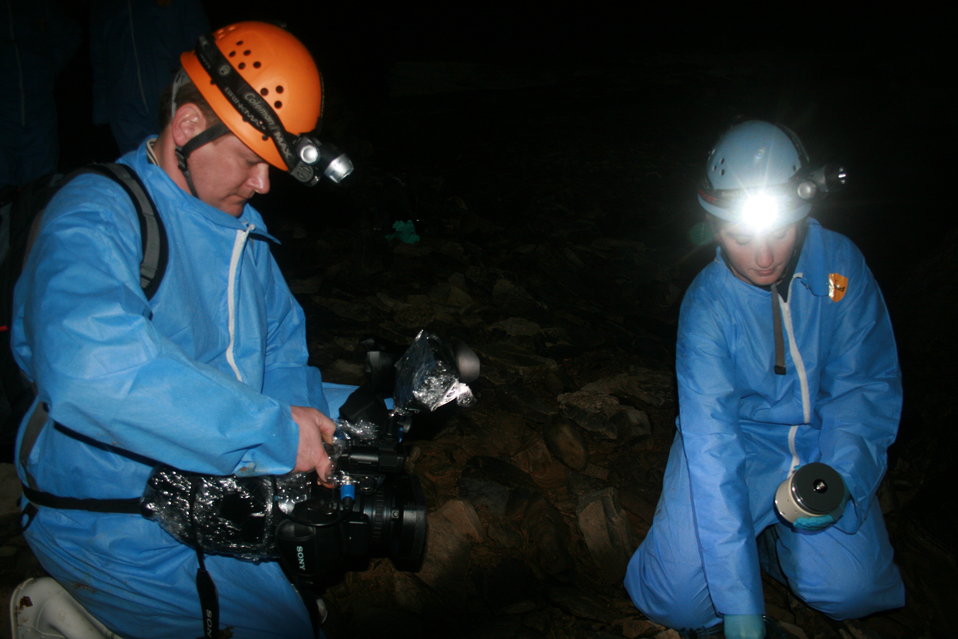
Filming MDC biologist with air sampler

Journalist Fritz Faerber films MDC biologist Shelly Colatski working with air sampler